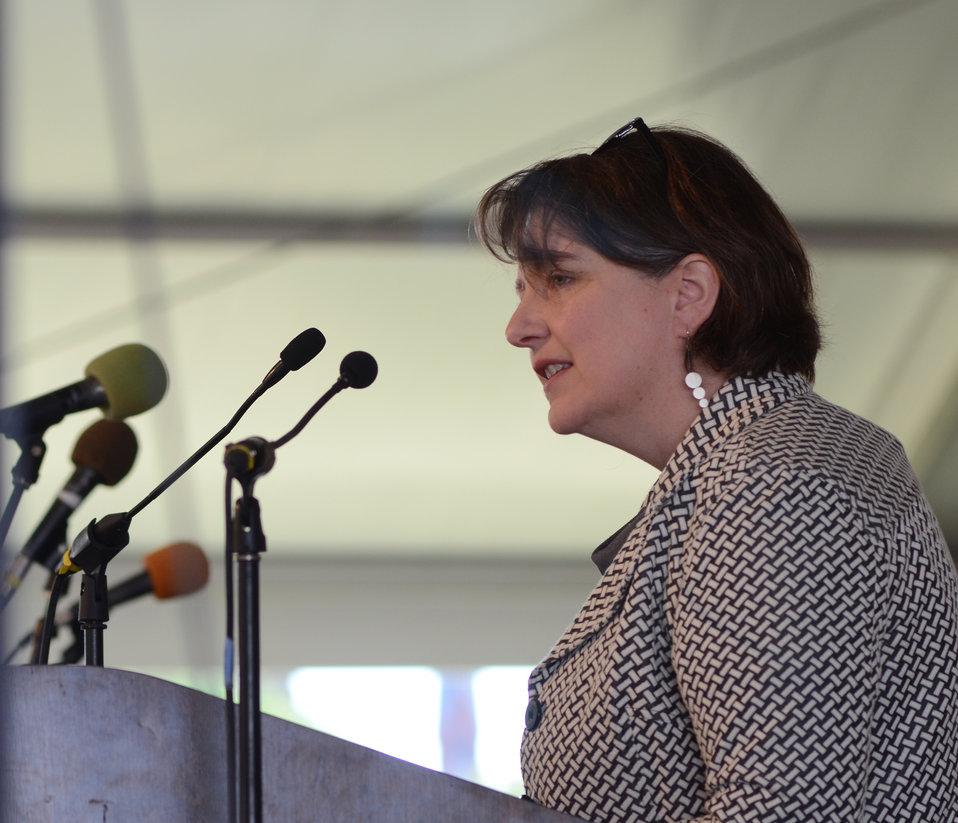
Agriculture Deputy Secretary Kathleen Merrigan speaks at the opening ceremony for the 2012 Smithsonian Folklife Festival in Washington, D.C. on Wednesday, June 27, 2012. This year’s festival features three themes; “Creativity and Crisis” celebrates the 25th anniversary of the AIDS Memorial Quilt, “Citified,” explores the rich culture and community of neighborhoods east of the Anacostia, and the third “Campus and Community” celebrates 150 years of USDA and the Land-Grant university system.